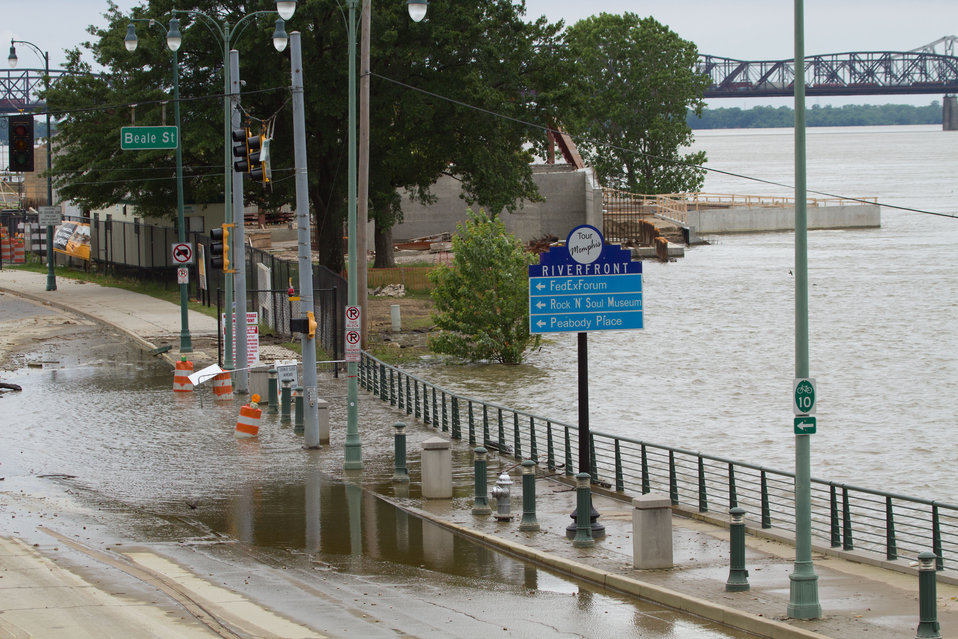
Beale Street in Memphis, TN, on Saturday, May 14. 2011, remains partially flooded, visitors are still coming to the waterfront to see the flood level, debris, and rocks on the historic Beale Street (seen flooded) in USDA Photos by Lance Cheung.